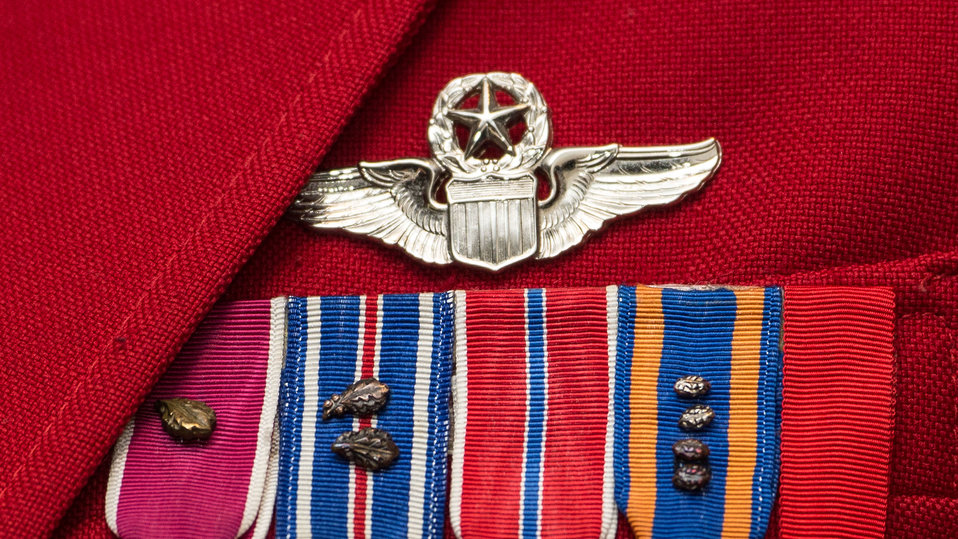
Ribbons worn on the red jackets of Tuskeegee airmen Retired U.S. Air Force (USAF) Pilot Colonel Charles Edward McGee and Tuskegee Airmen Incorporated (TAI) National Historian William F. Holton at the U.S. Department of Agriculture (USDA) Office of the Assistant Secretary for Civil Rights (OASCR) event “In conversation With Tuskegee Airmen” to honor the airmen’s successes both overseas and at home at USDA in Washington, D.C. on Thursday Mar. 27, 2014. Col. McGee recounted his experiences in the Army Air Corp (later Army Air Force and Air Force) starting in the 1940’s and Mr. Holton spoke about his experiences in the the U.S. Navy. Questions from the audience provided several opportunities to open the discussion about civil rights challenges and how they achieved success and respect.